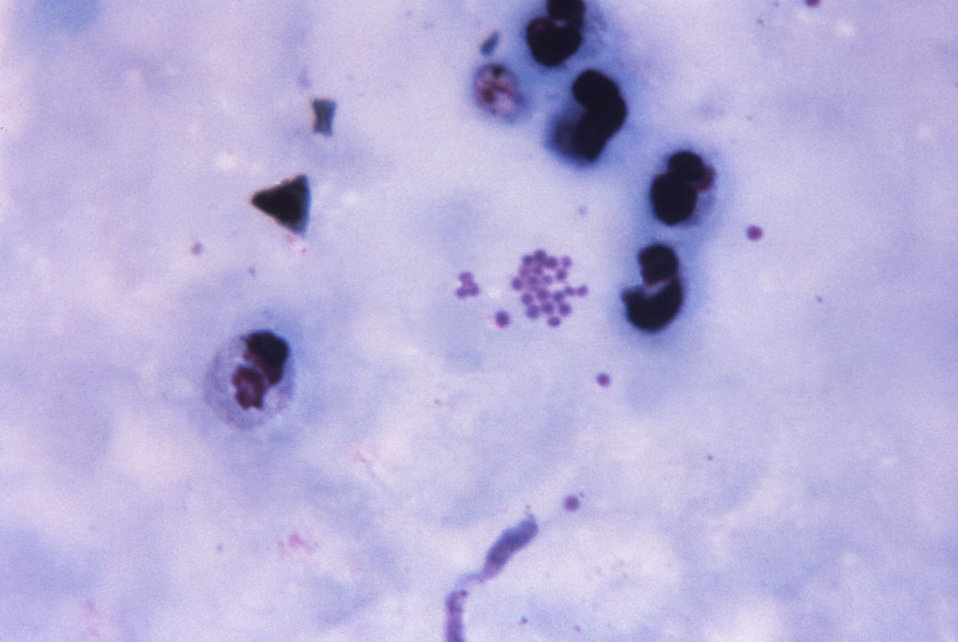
This thick film Giemsa stained micrograph reveals a number of bacterial contaminants producing an artifactual finding.